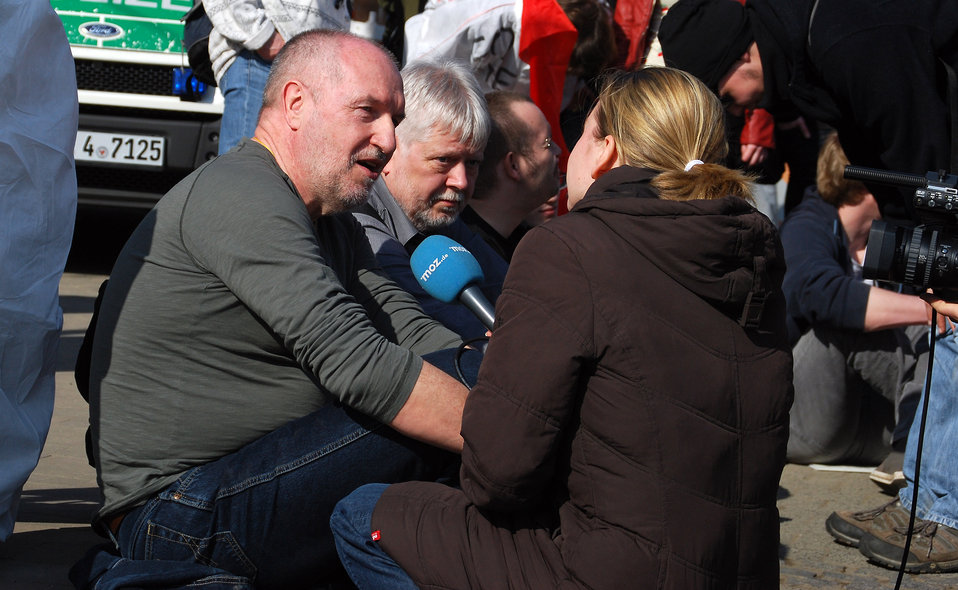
Proteste gegen den Nazi-Aufmarsch am 24.3.2012 in Frankfurt (Oder)